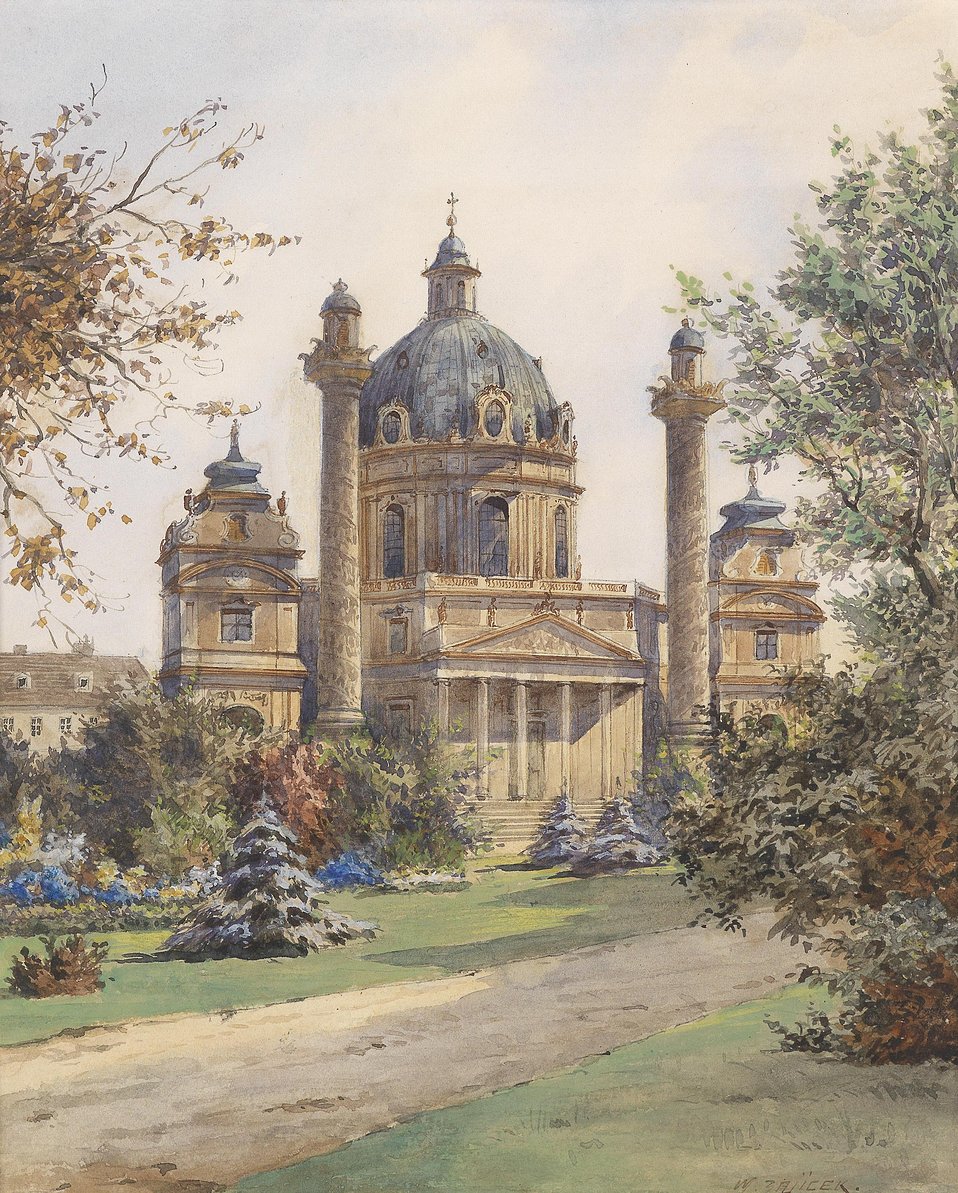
Deutsch: Die Karlskirche in Wien, signiert K. W. Zajicek, Aquarell auf Papier, 23 x 18 cm